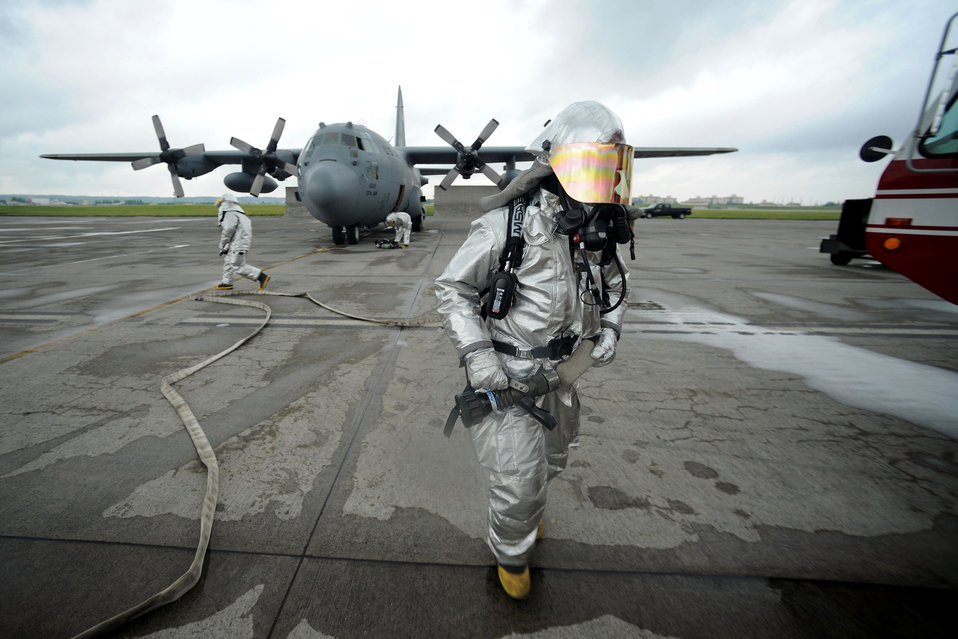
That's a wrap

Firefighters at Yokota Air Base, Japan, begin to pack up after completing a C-130 Hercules egress exercise May 26, 2010, during an operational readiness exercise. Yokota AB officials conduct such exercises periodically to ensure operational readiness.